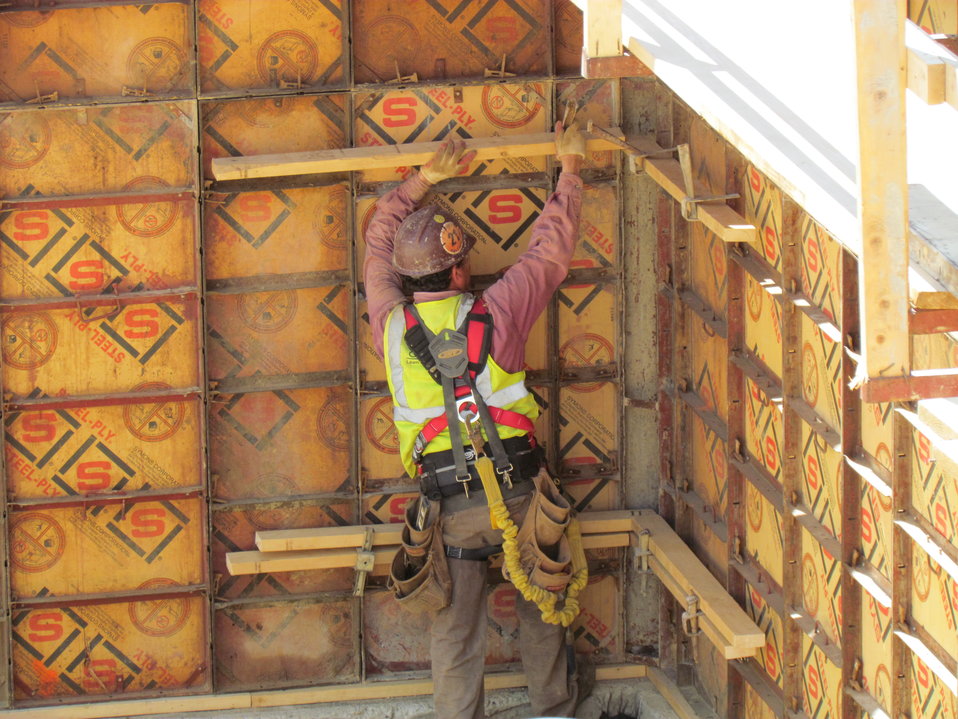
Net-Zero Energy Residential Test Facility - Construction photo showing workman installing concrete basement wall forms.